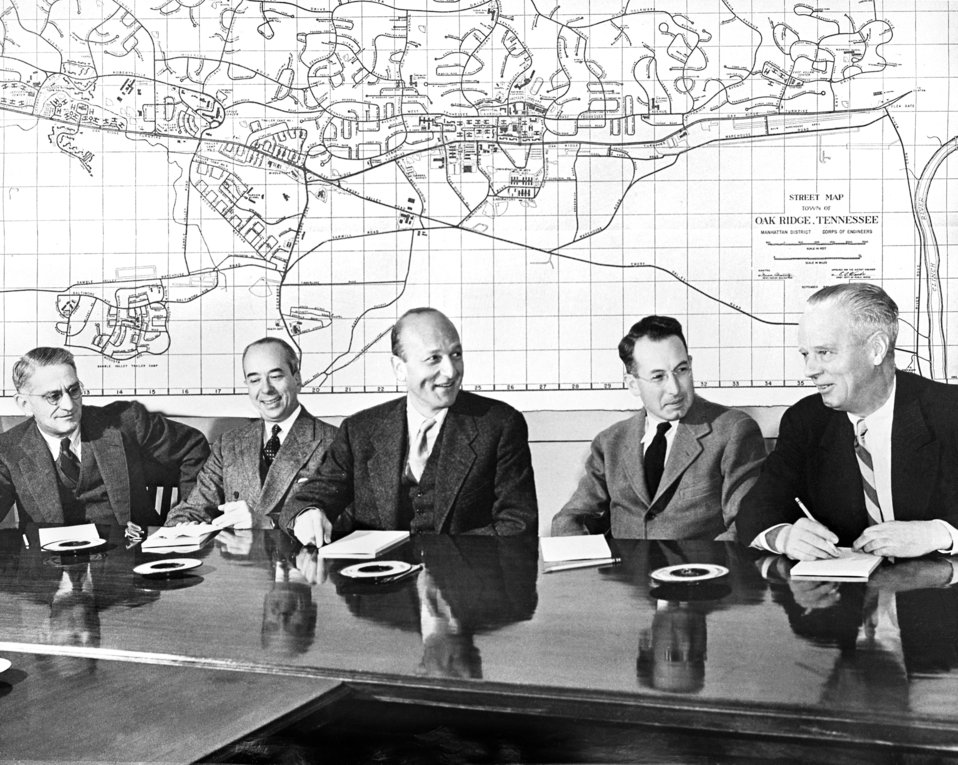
AEC Commission First Group Oak Ridge 1947

3416-3 DOE photo Ed Westcott 1947 L to R W.W. Waymack, Lewis L. Strauss, Robert F. Bacher, Sumner T. Pike Oak Ridge Tennessee